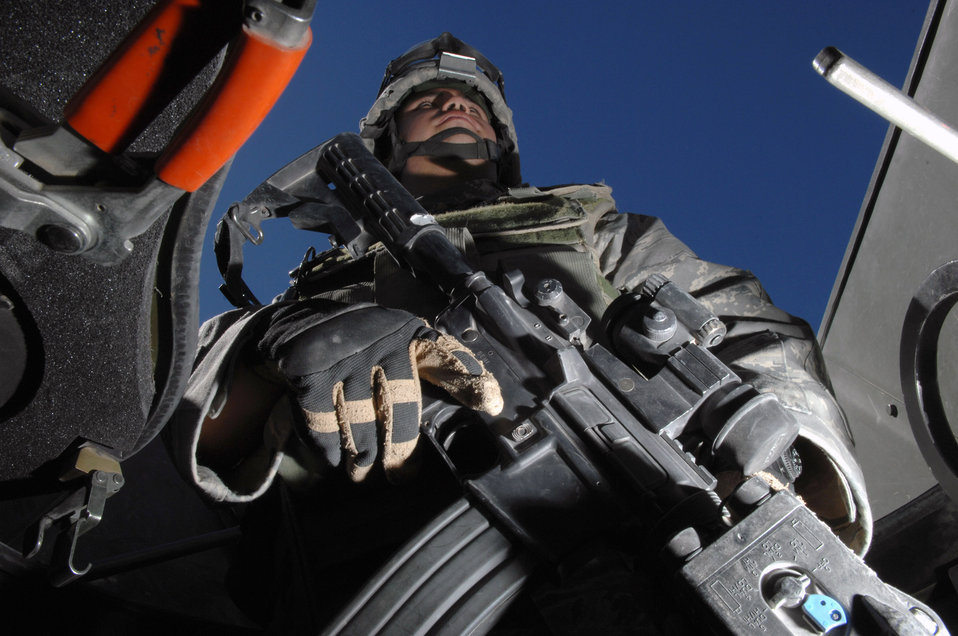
Armed and ready

Airman 1st Class Jordan Gogov stands guard Aug. 11 during convoy operations training at Creech Air Force Base, Nev. The training is part of the 99th Security Forces Ground Combat Training Squadron's Joint Base Balad training curriculum, a new 45-day course.